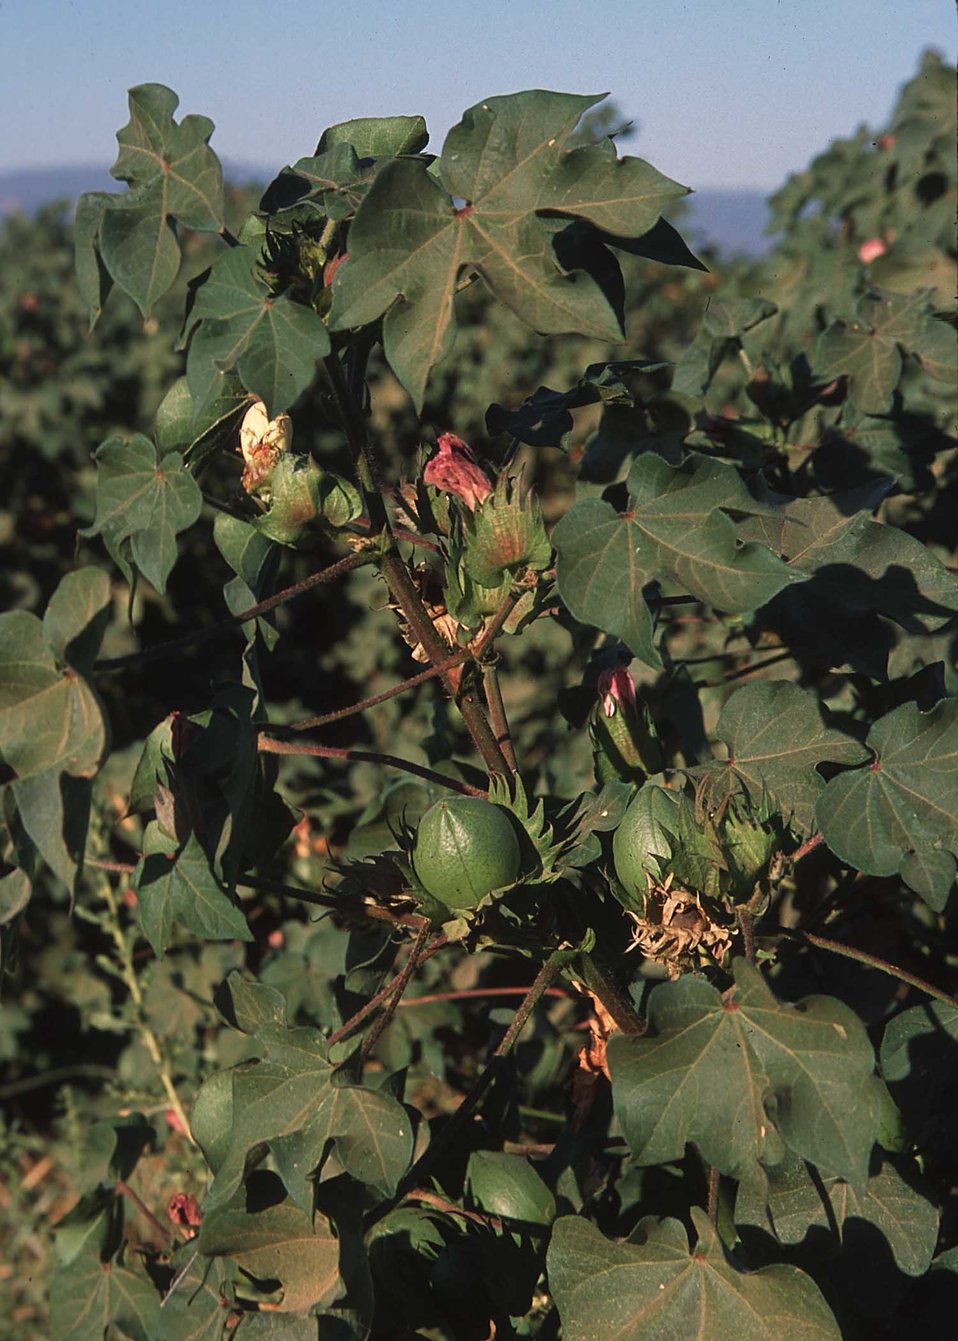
Cotton grown in Northern California.